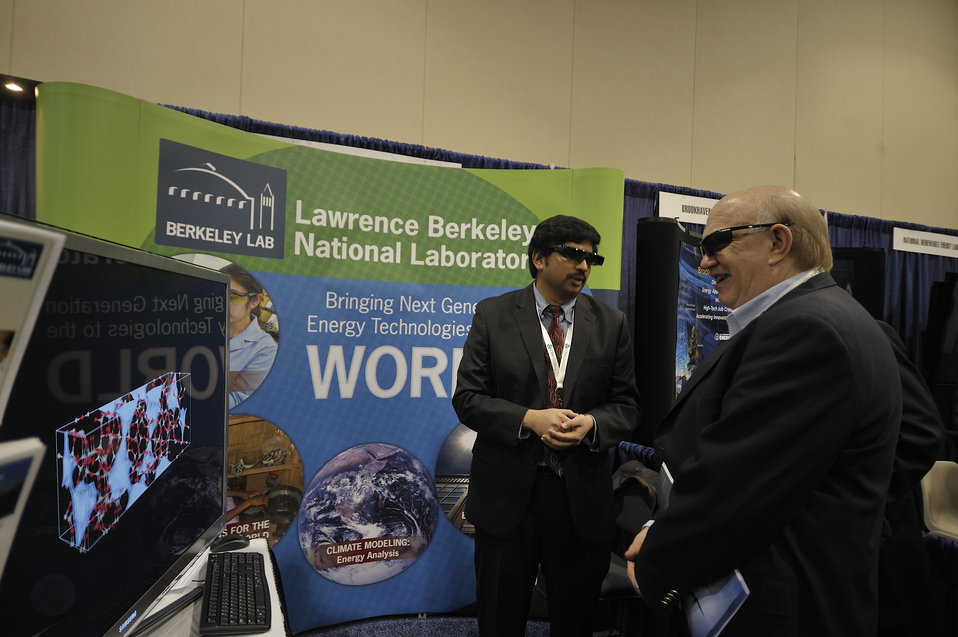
ARPA-E Energy Innovation Summit 2011, 41 of 83

Lawrence Berkley National Laboratory's booth at the Summit's Technology Showcase.